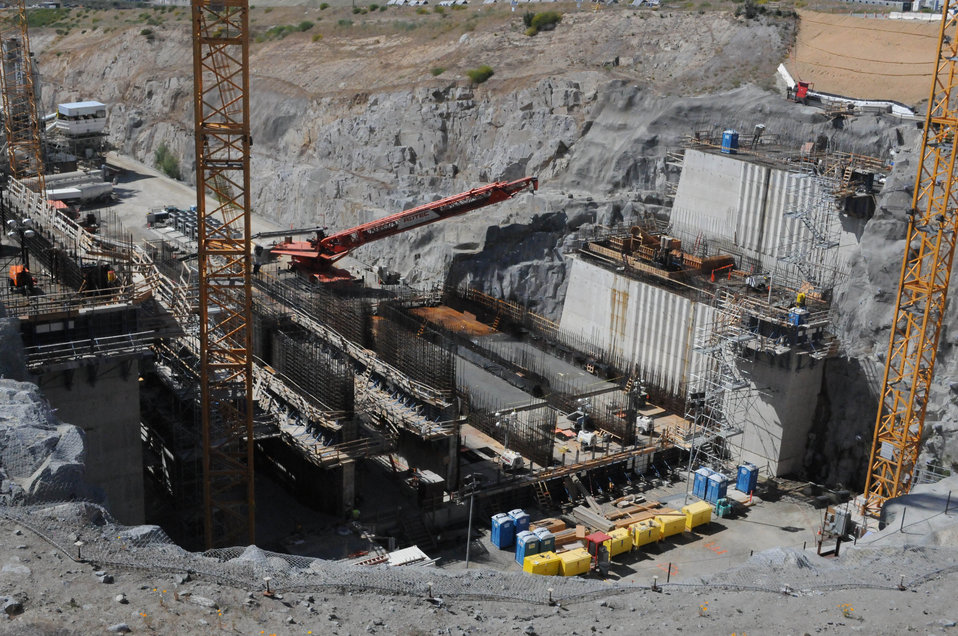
Folsom’s ‘second dam’ beginning to take shape

Support structures for each of the Folsom Dam auxiliary spillway’s six gates continue to rise April 24, 2013 in Folsom, Calif. The control structure, essentially a second dam, will work with the main dam to release water from the reservoir during large storms.